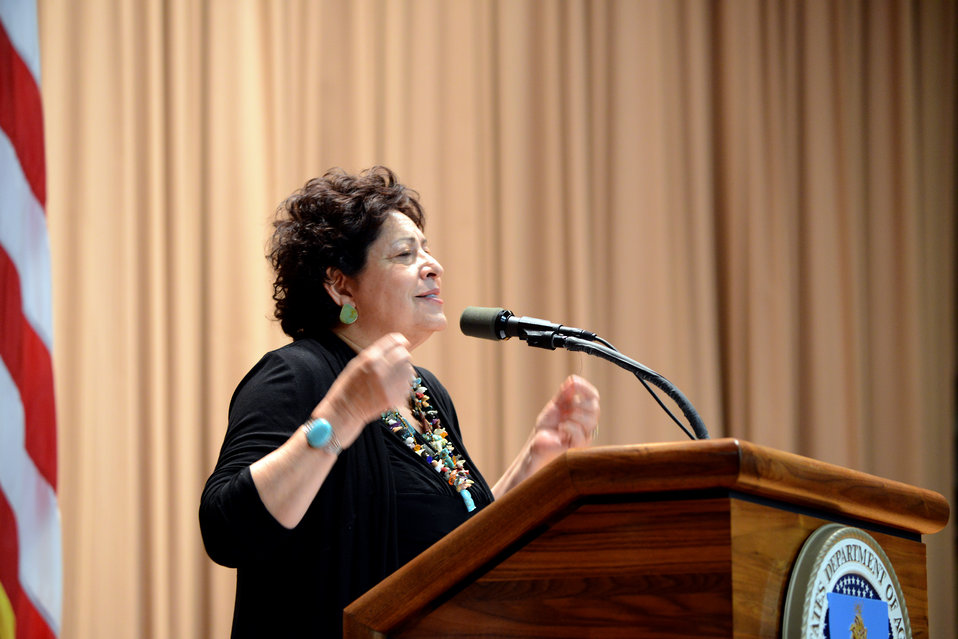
U.S. Office of Personnel (OPM) Director Katherine Archuleta speaks at the U.S. Department of Agriculture’s (USDA) Women’s History Month Observance in the Jefferson Auditorium at USDA on Thursday, Mar. 13, 2014. The theme for this year’s observance is “Celebrating Women of Character, Courage, and Commitment”.